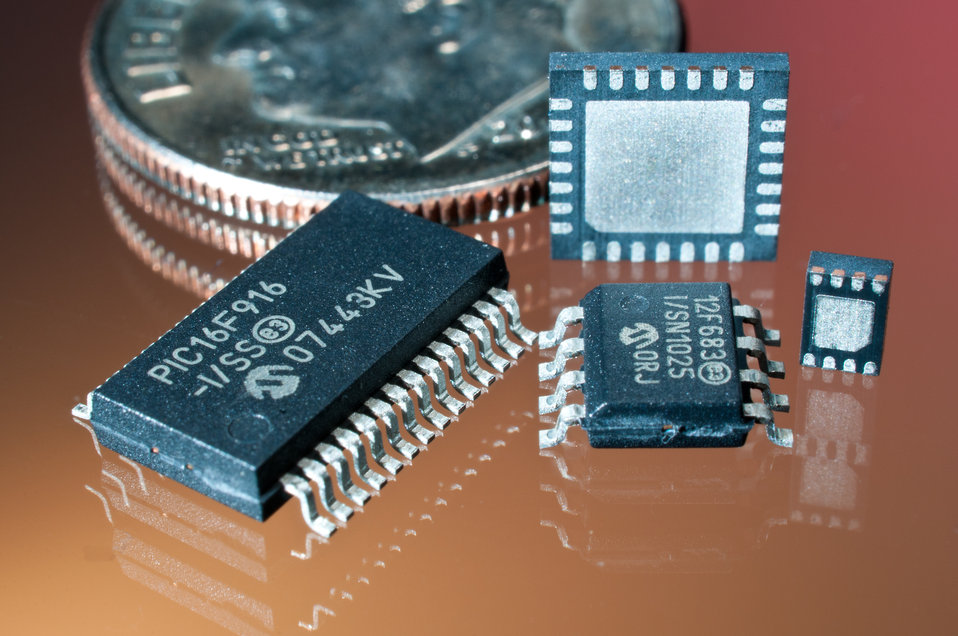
Argonne National Laboratory's Vulnerability Assessment Team (VAT) does a lot of work with electronics and microprocessor-based circuits and systems.